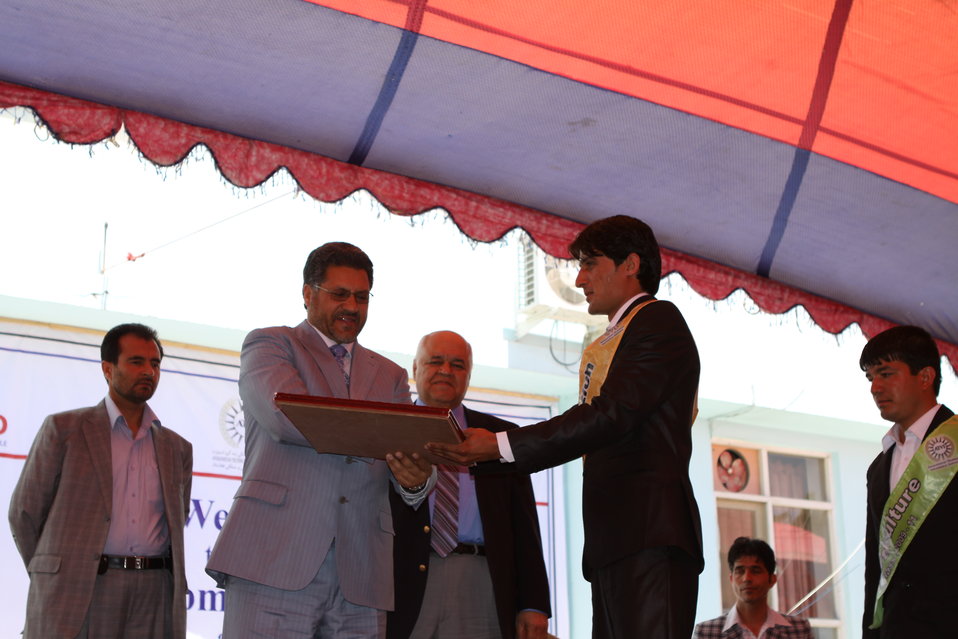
100522 ATVI Graduation 113